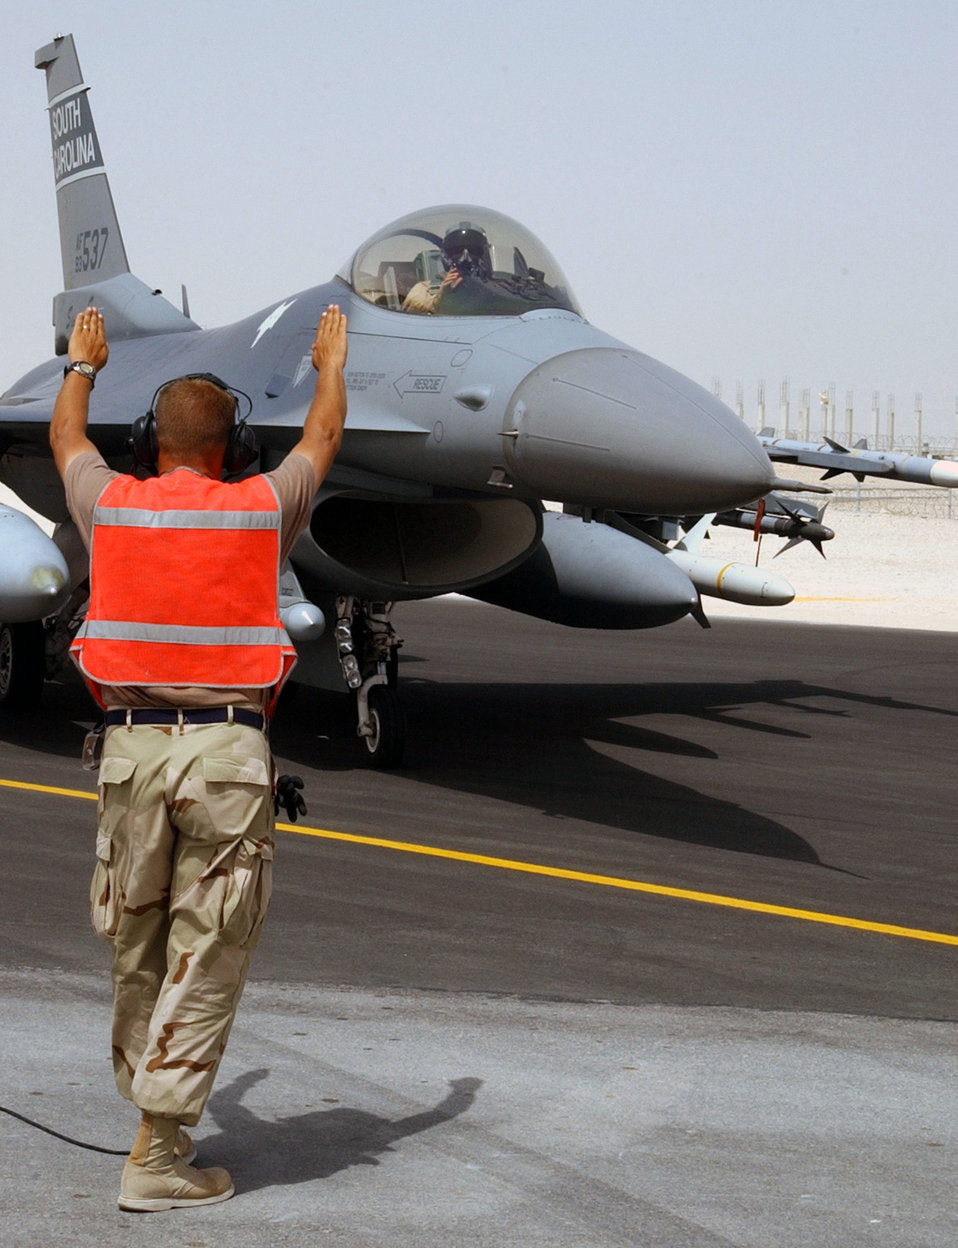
Another sortie

OPERATION IRAQI FREEDOM -- Members of the End of Runway team of the 157th Aircraft Maintenance Unit, make final preparations for this F-16CJ to fly another combat sortie, April 1, 2003. The 157th AMU is assigned to the 379th Air Expeditionary Wing. The 379th AEW is a forward deployed unit in Southwest Asia, supporting Operation Iraqi Freedom. The 157th AMU is a deployed unit from the South Carolina Air National Guard assigned to the 169th Fighter Wing.